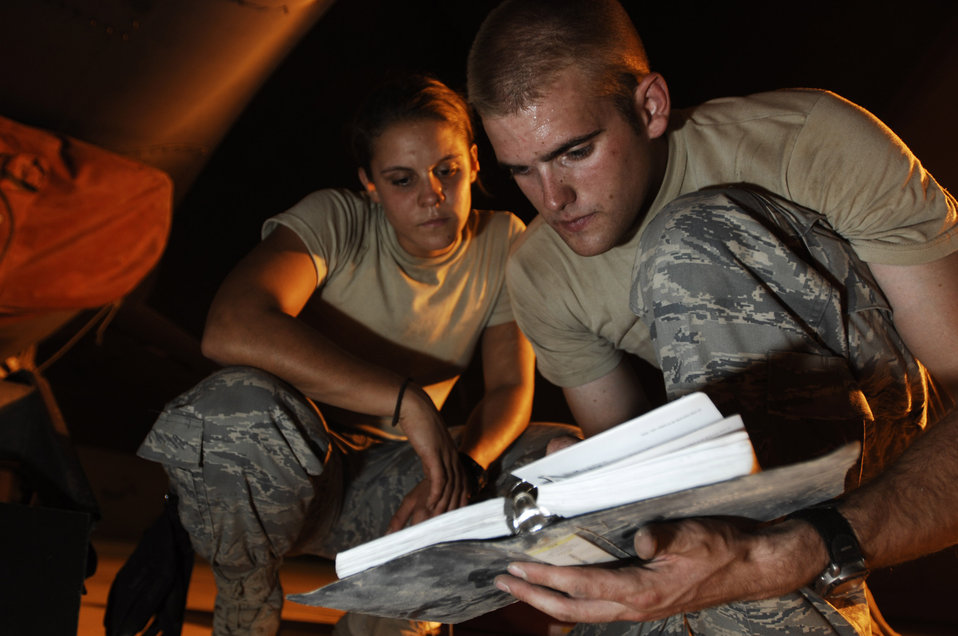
Making it right

Installing a rack for radar on an F-16 Fighting Falcon, Staff Sgt. Prentiss Hyde (right) reviews a technical order with Airman 1st Class Christeen Angelaitis July 31 at Joint Base Balad, Iraq. Both Airmen are deployed from Shaw Air Force Base, S.C.